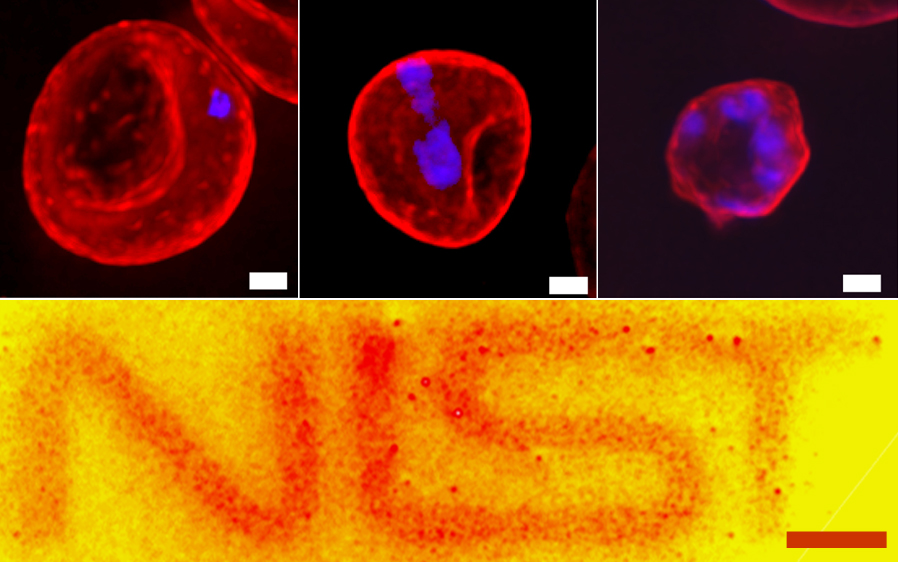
Nanoparticles; Medical Imaging

Human red blood cells, in which membrane proteins are targeted and labeled with quantum dots, reveal the clustering behavior of the proteins. The number of purple features, which indicate the nuclei of malaria parasites, increases as malaria development progresses. The NIST logo at bottom was made by a photo lithography technique on a thin film of quantum dots, taking advantage of the property that clustered dots exhibit increased photoluminescence. (White bars: 1 ¿m; red: 10 ¿m.)